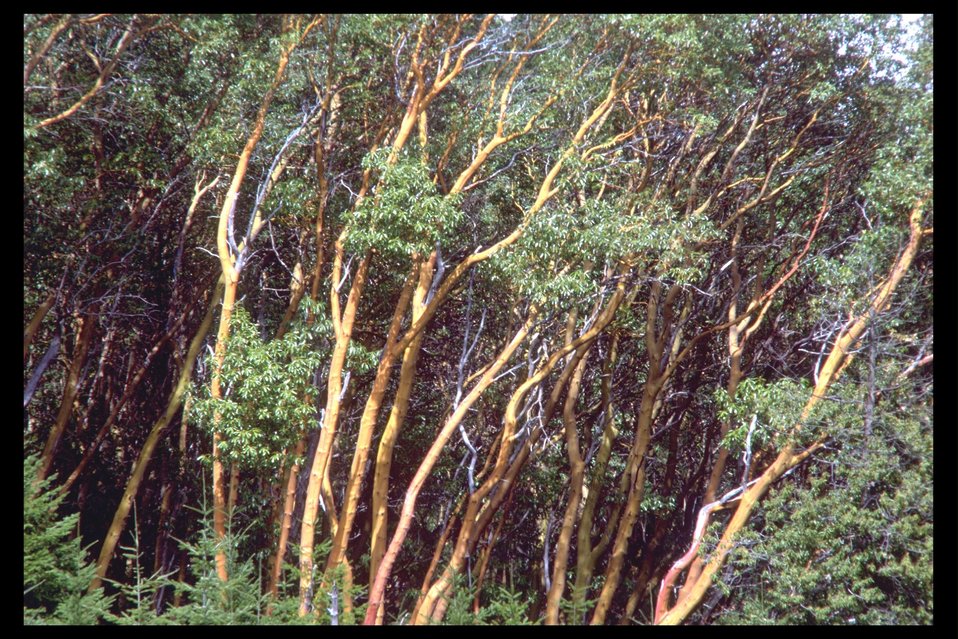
Madrone Trees, along East Evans Creek.